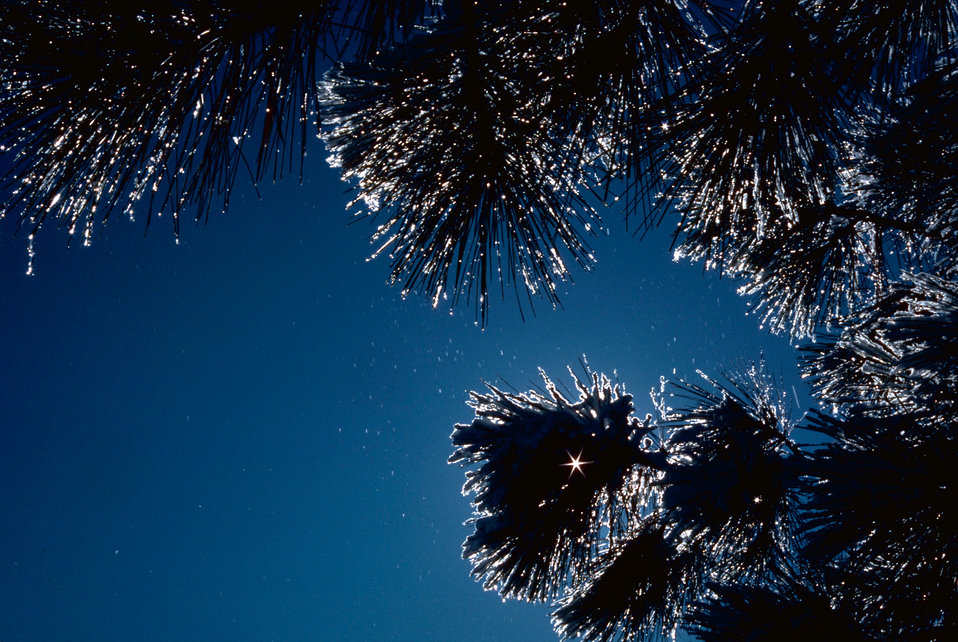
Photo of the Week - Winter shot at John Heinz National Wildlife Refuge

Photo of the week - 12/22/09

Winter shot of evergreen at John Heinz National Wildlife Refuge (PA)